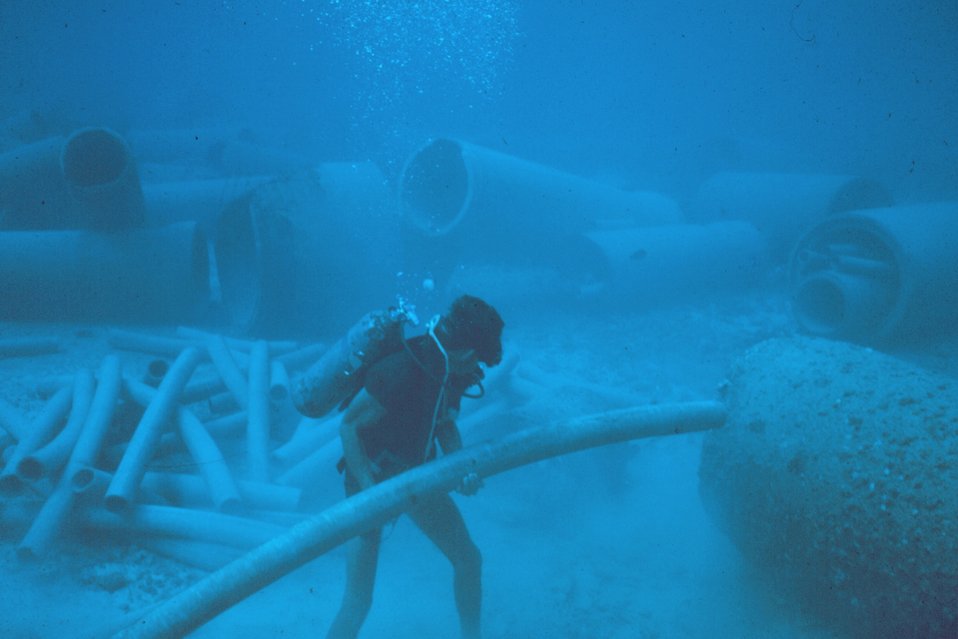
Small pipes were moved to the interior of larger pipes to create more complex habitats for comparative studies.